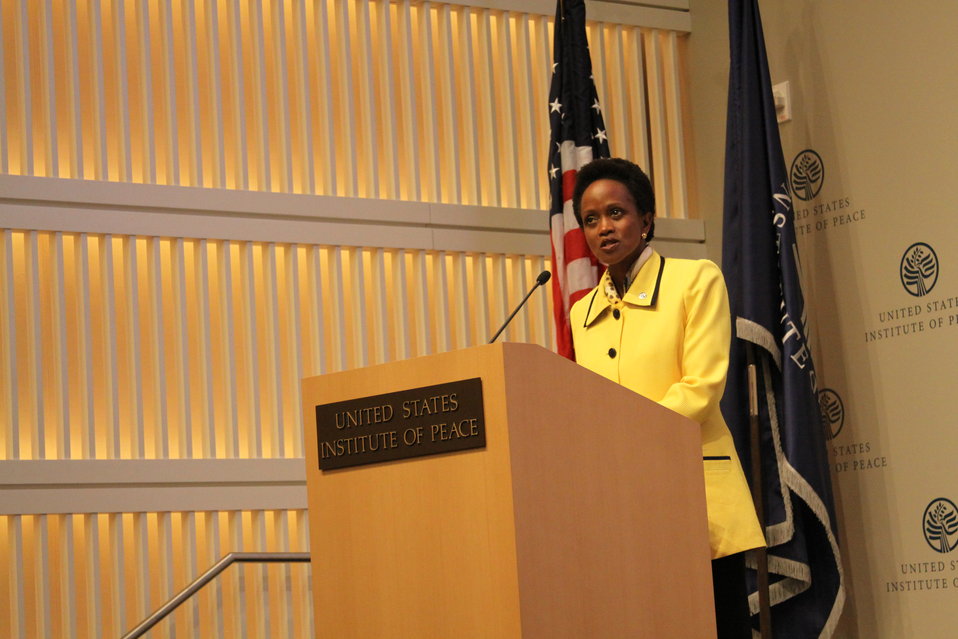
Assistant Secretary Brimmer Delivers Remarks

U.S. Assistant Secretary for International Organization Affairs Esther Brimmer delivers remarks on 'Sustaining America's Global Leadership: U.S. Priorities at the United Nations,' at the U.S. Institute of Peace in Washington, D.C., on September 7, 2011.